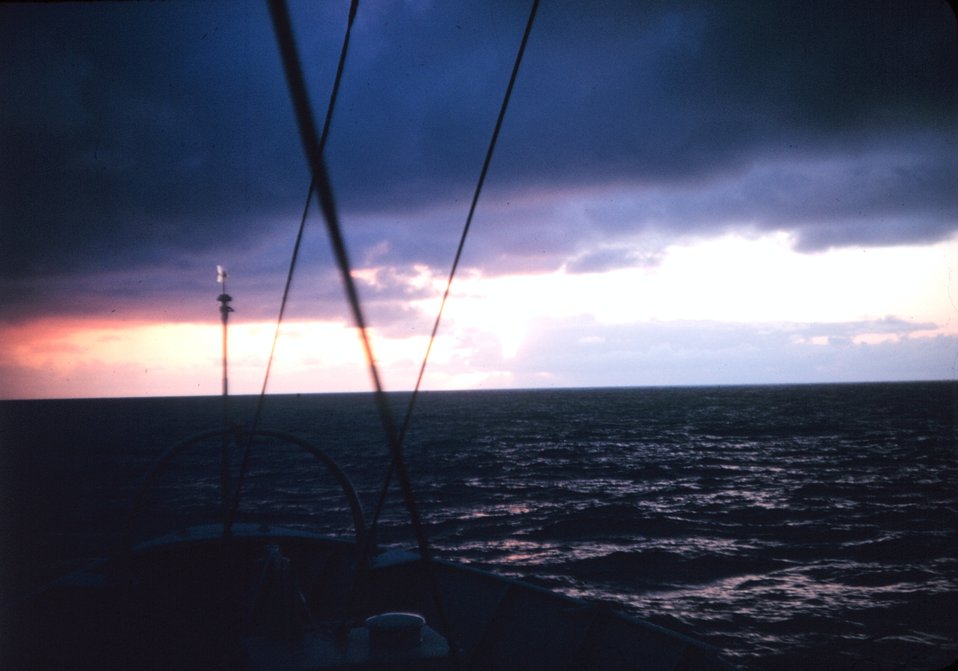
A Gulf of Alaska sunset as the PATHFINDER heads home from a long season.